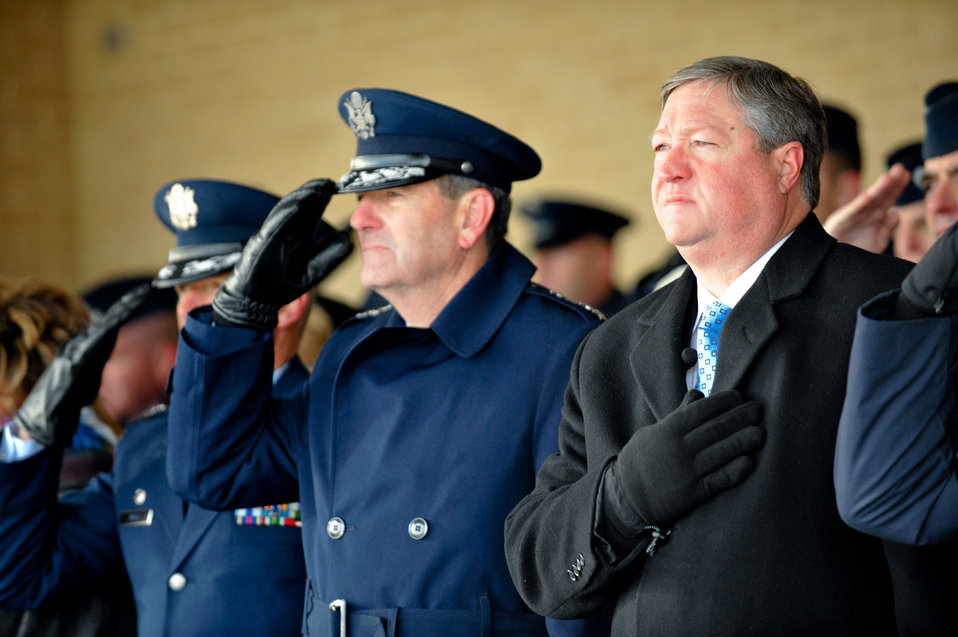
Air Force secretary visits Lackland, addresses priorities

Secretary of the Air Force Michael Donley (right), and Gen. Stephen R.
Lorenz pay respect to the national anthem during the Basic Military Training graduation ceremony Jan. 8, 2010, at Lackland Air Force Base, Texas. The ceremony was held in sub-freezing temperatures on the parade grounds. General Lorenz is the Air Education and Training Command commander.